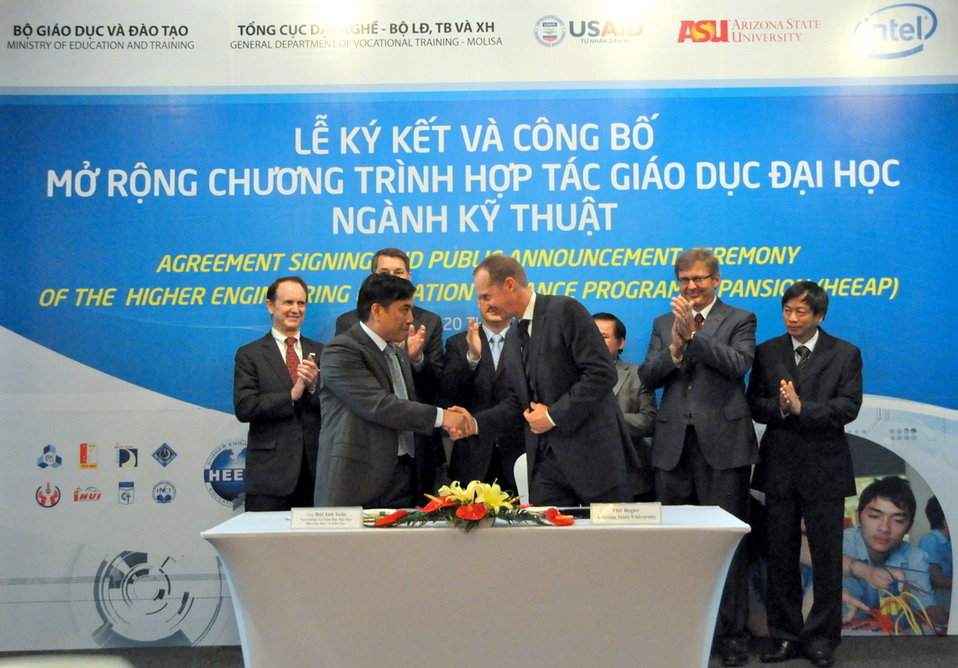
Higher Engineering Education Alliance Program Expansion Launch

Hanoi, August 20, 2012.